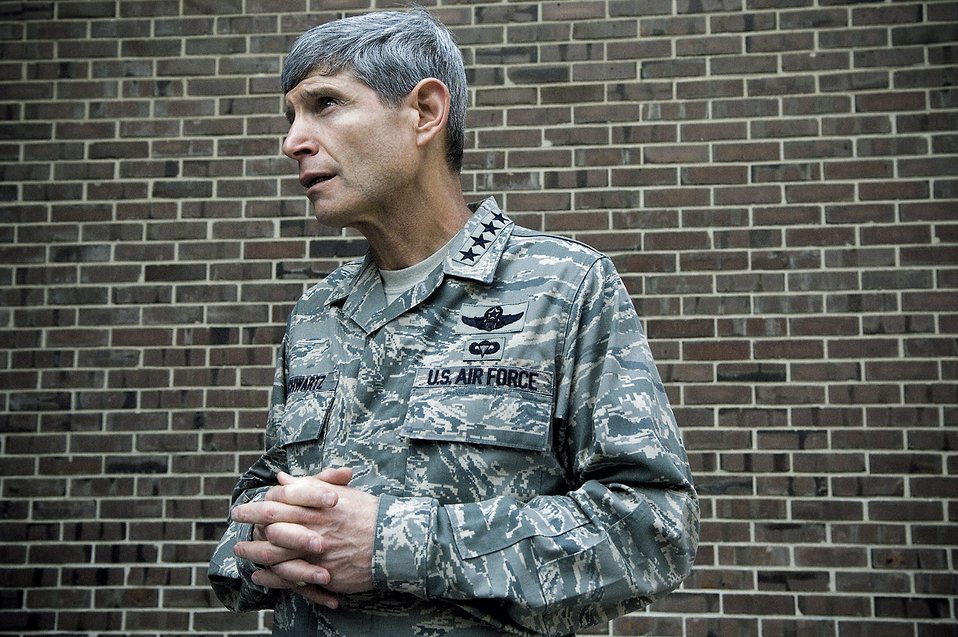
General addresses transportation

Gen. Norton A. Schwartz, commander of U.S. Transportation Command, discusses issues facing today's Air Force May 27 during a leadership forum at the University of Pennsylvania's Annenburg Center in conjunction with Air Force Week-Philadelphia. The week is designed to broaden awareness of the U.S. Air Force's role in the war on terrorism and strengthen support for Airmen serving worldwide in defense of freedom.